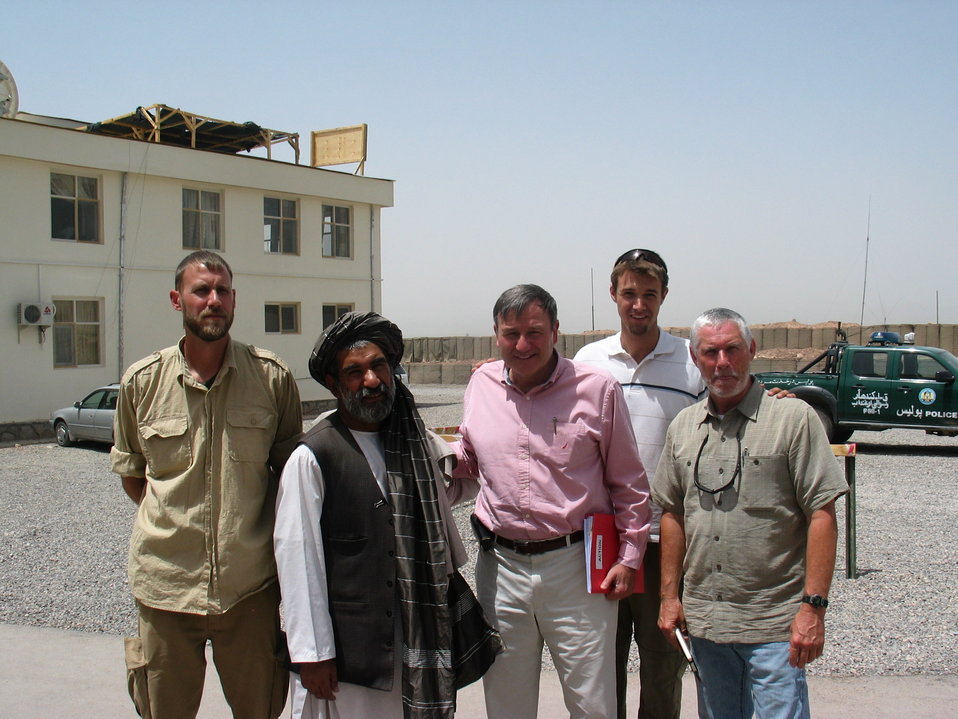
CODEL Berman